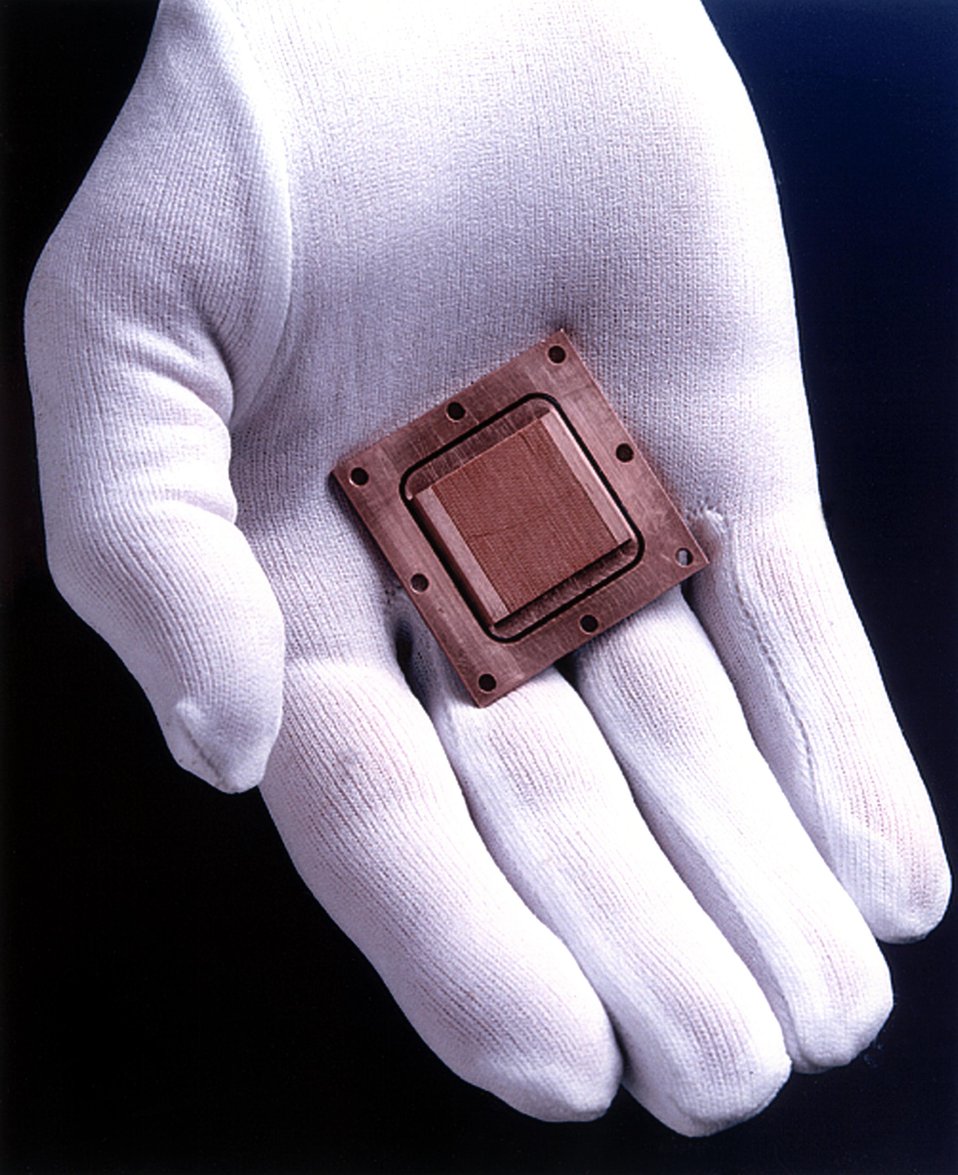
MICRO-CHANNEL HEAT PROCESSOR DEVELOPED AT PACIFIC NORTHWEST NATIONAL LABORATORY.

COMPACT HEAT PUMPS, DEVELOPED AT PNNL, BASED ON ENGINEERED MICROSYSTEMS WERE DEVELOPED FOR PORTABLE USES AND BUILDING APPLICATIONS. MINIATURIZED COMPONENTS INCLUDE A HEAT-ACTUATED COMPRESSOR AND MICRO-CHANNEL HEAT EXCHANGERS. MICRO-CHANNEL HEAT PROCESSORS MAY ONE DAY REPLACE HOME FURNACES AND COULD BE USED BY EMERGENCY WORKERS AND MILITARY PERSONNEL, EVEN IN REMOTE AREAS LIKE THE ARCTIC.